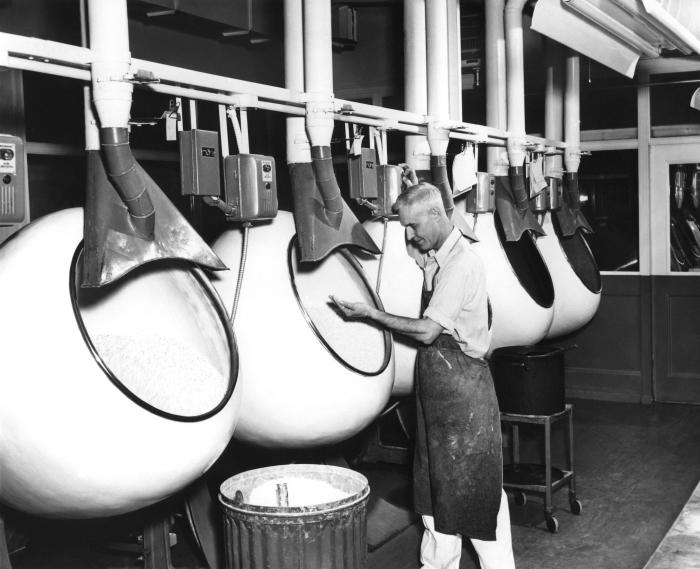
This historical photograph, provided by the Center for Disease Control's (CDC), National Institute for Occupational Safety and Health (NIOSH), depicted a manufacturing technician inside a Norwich, New York pharmaceutical pill factory, who'd been on the job for over 30 years. At the time, he was checking the quality of pills inside a rotating pill-coating machine with a capacity of 400,000 tablets. Note that the technician was wearing no filtered breathing mask, goggles, or gloves while performing his task. This image was published in the July, 1948 issue of the 'Industrial Bulletin, New York', p. 36.